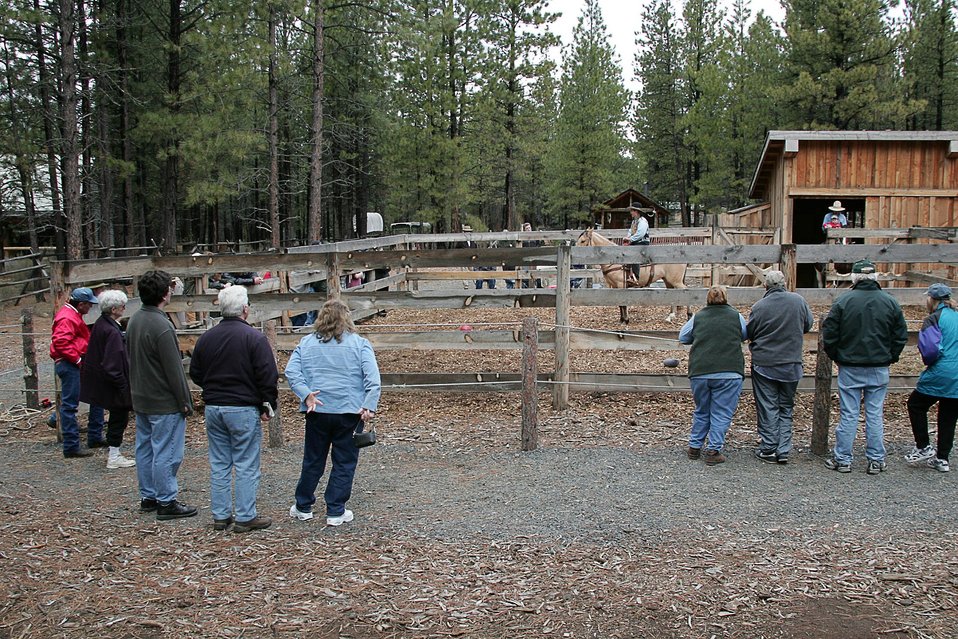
Horse trainers Kitty and Rich Lauman talk with High Desert Museum visitors about the working with the wild mustangs Sage and Spirit.